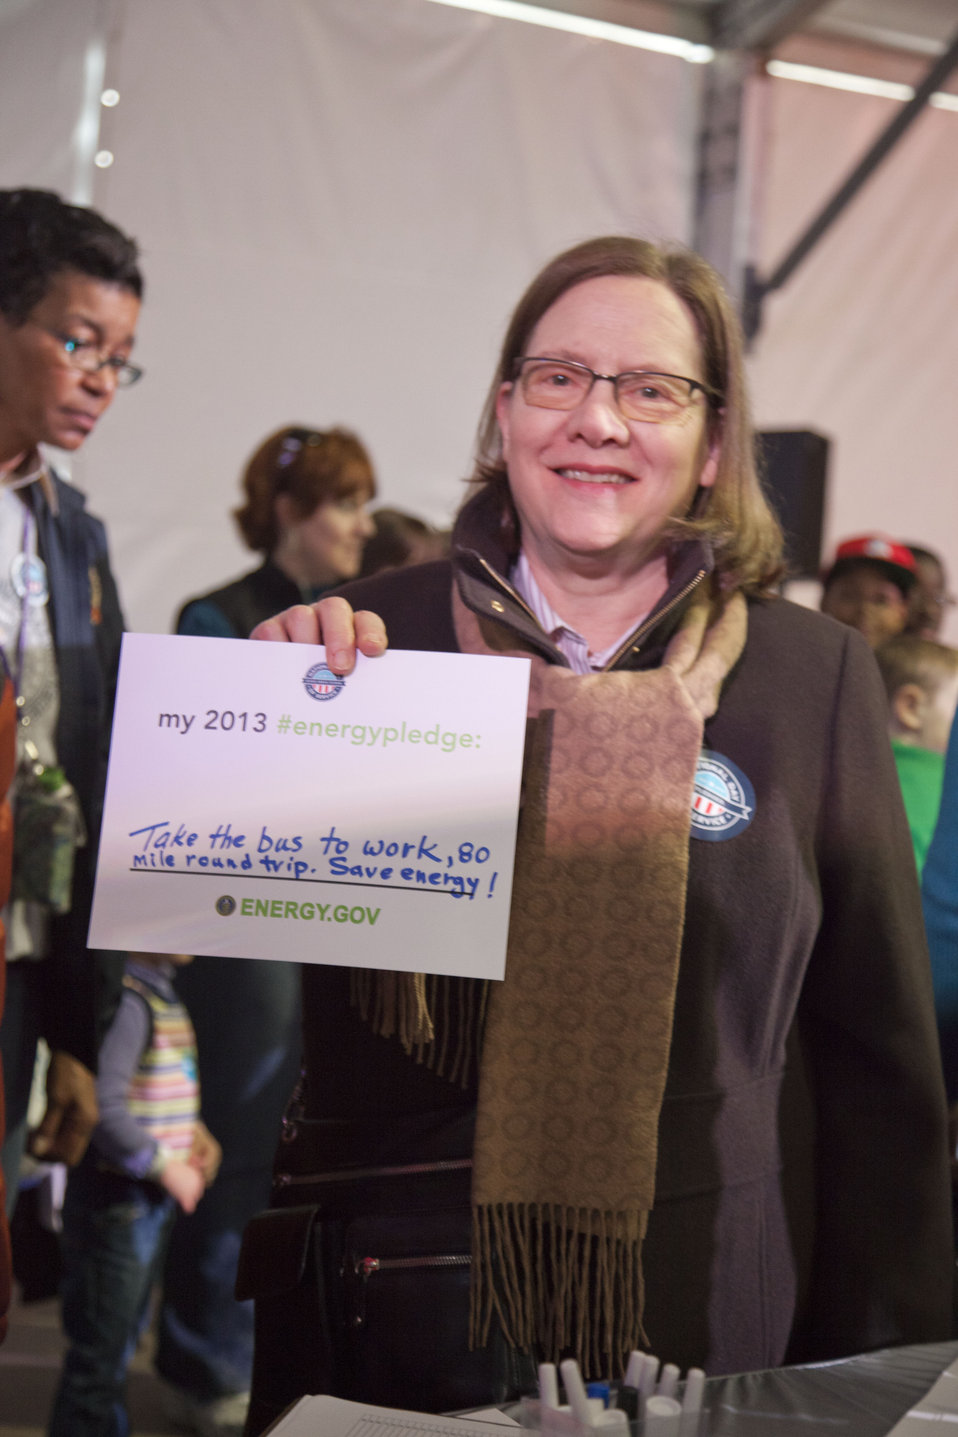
What's your #energypledge?